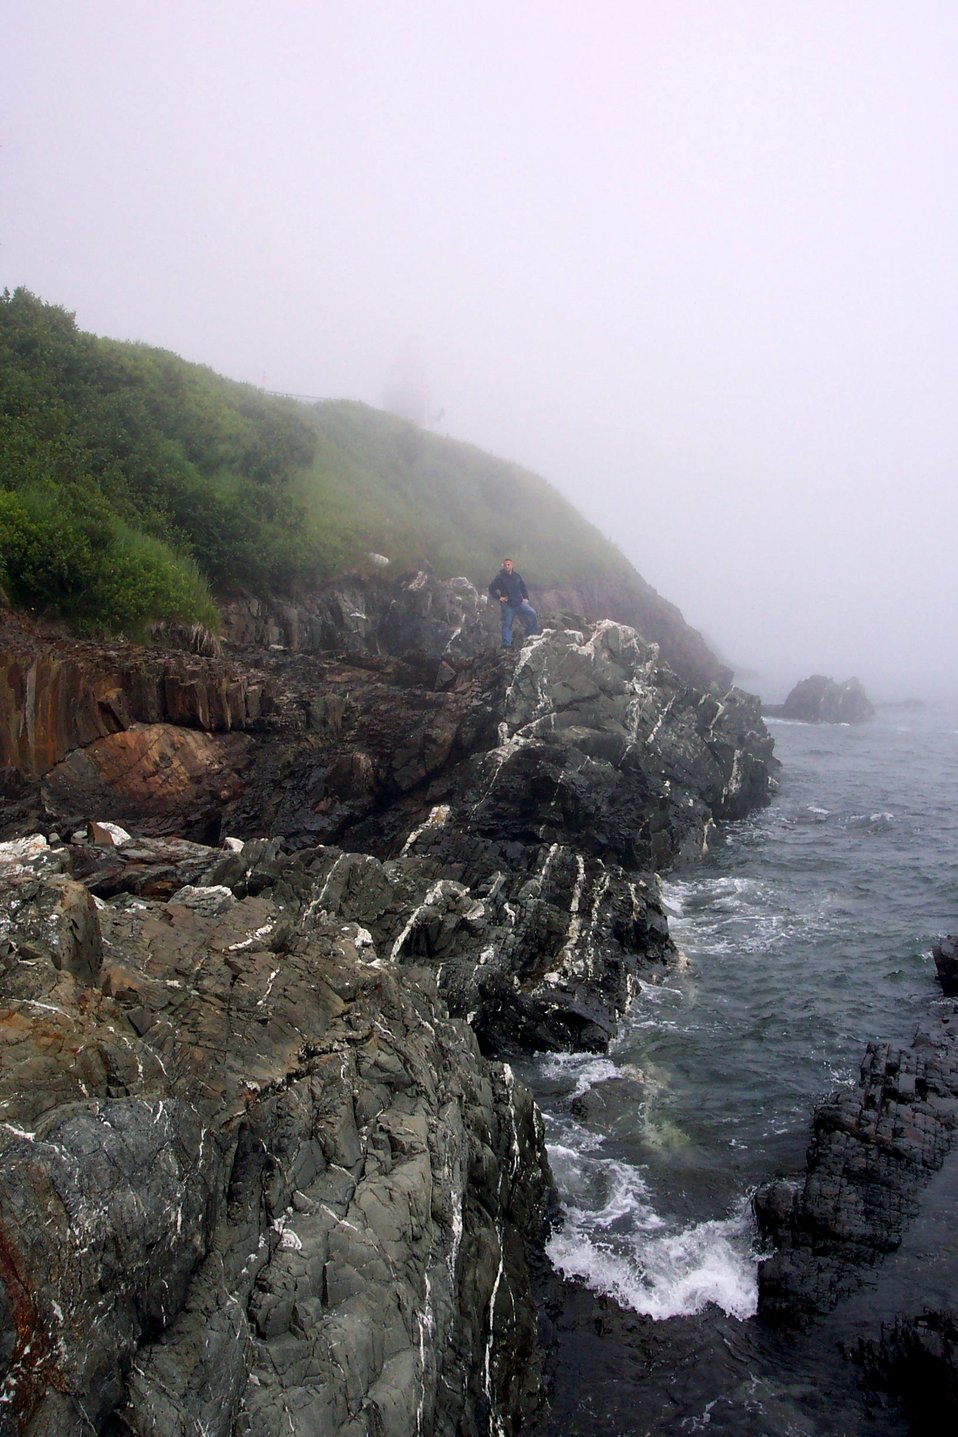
Rock-hopping below the lighthouse at West Quoddy Head.